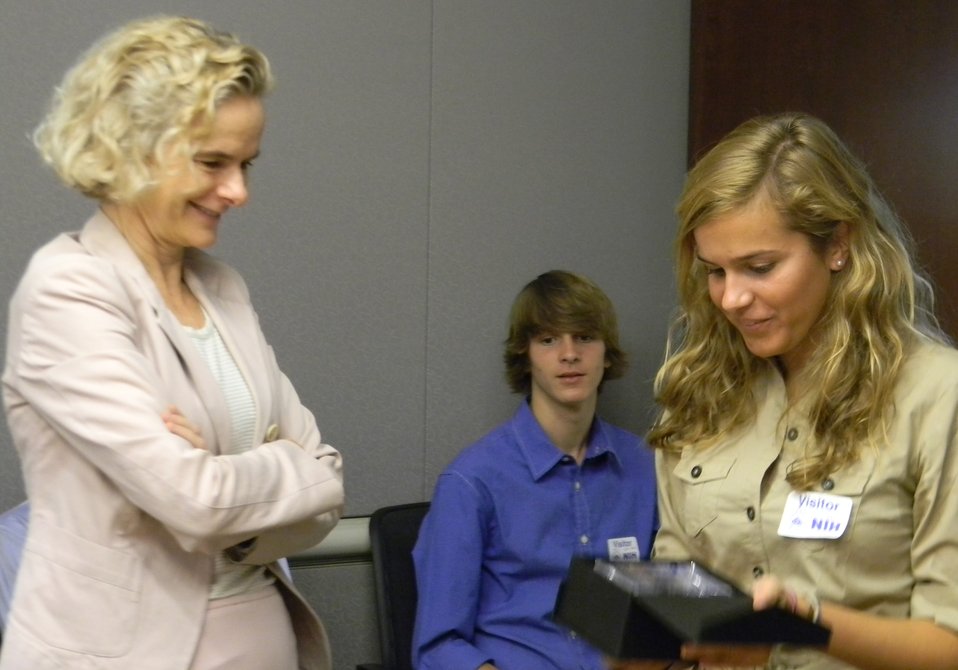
Volkow and Schumacher3

Dr. Nora Volkow (NIDA Director) presents Addiction Science Award to Darby Kathryn Schumacher (2nd place winner)